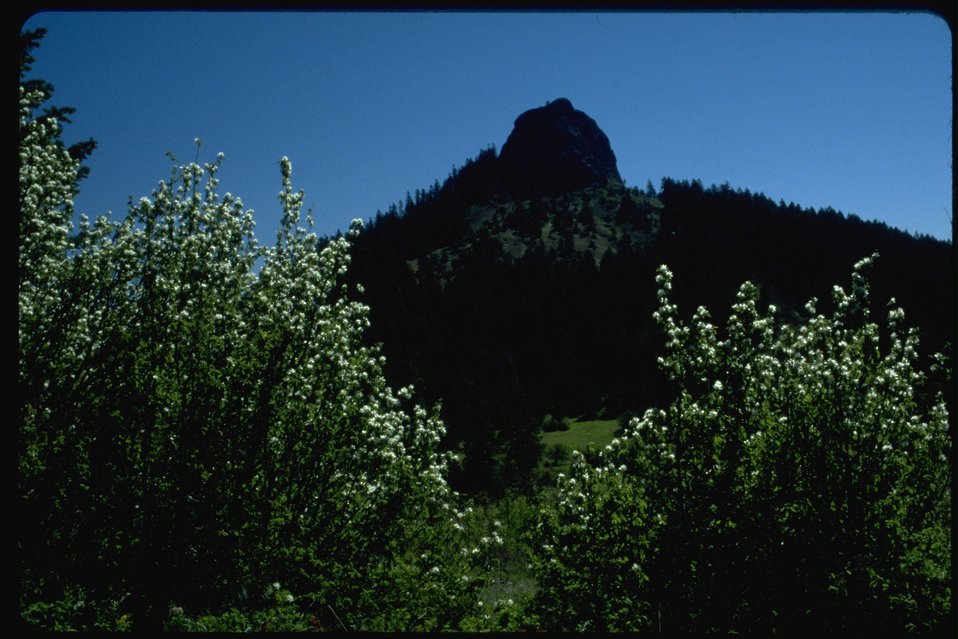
Medium shot of Service Berry in foreground and Pilot Rock in background.